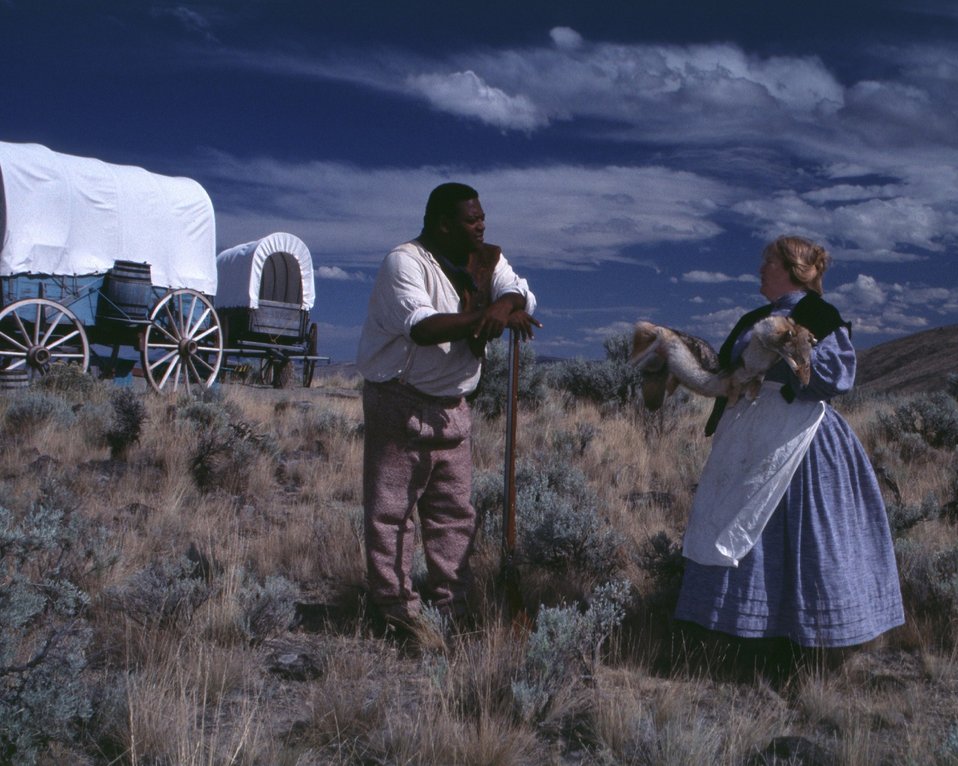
Nancy Harms and Dylan Prichertt portray pioneer woman and a black pioneer trading a fur at an Oregon Trail wagon encampment.